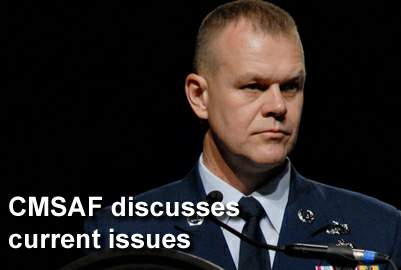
CMSAF holds open forum for Airmen at AFA

Chief Master Sgt. of the Air Force James A. Roy discussed such current issues as training, compliance and outlined the four pillars of the July 2009-July 2010 Year of the Air Force family. Chief Roy conducted an open forum at the 2009 Air Force Association Air & Space Conference and Technology Exposition at the National Harbor in Oxen Hill, Md., Sept. 16.